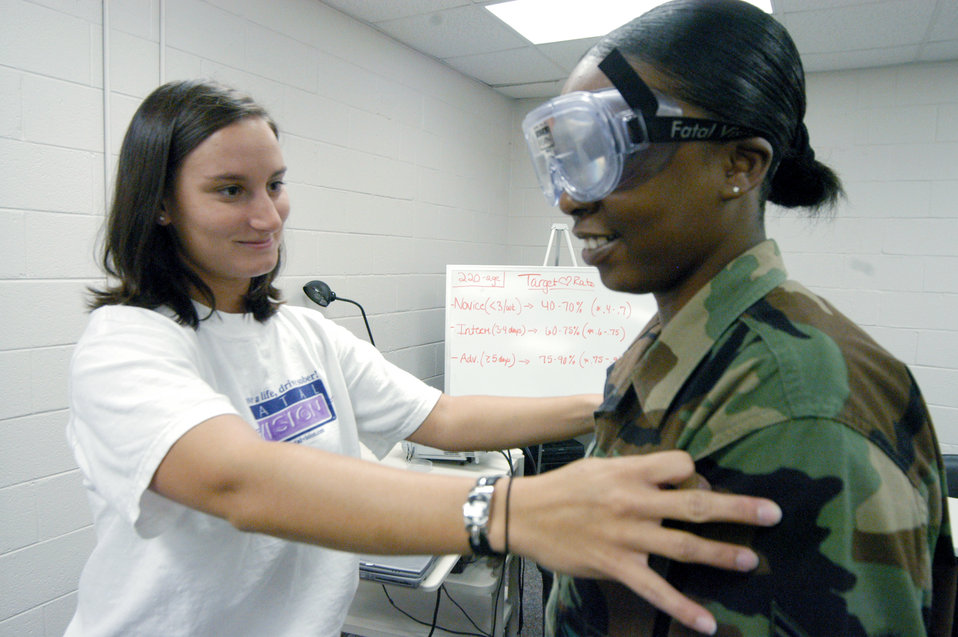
Fatal-vision goggles

ROBINS AIR FORCE BASE, Ga. -- Tanya Paul helps Staff Sgt. Lacretia Wiseman try out the fatal-vision goggles. The goggles can simulate vision at a blood alcohol content of 0.08 to 0.15 percent. Ms. Paul is an intern at the health and wellness center here.